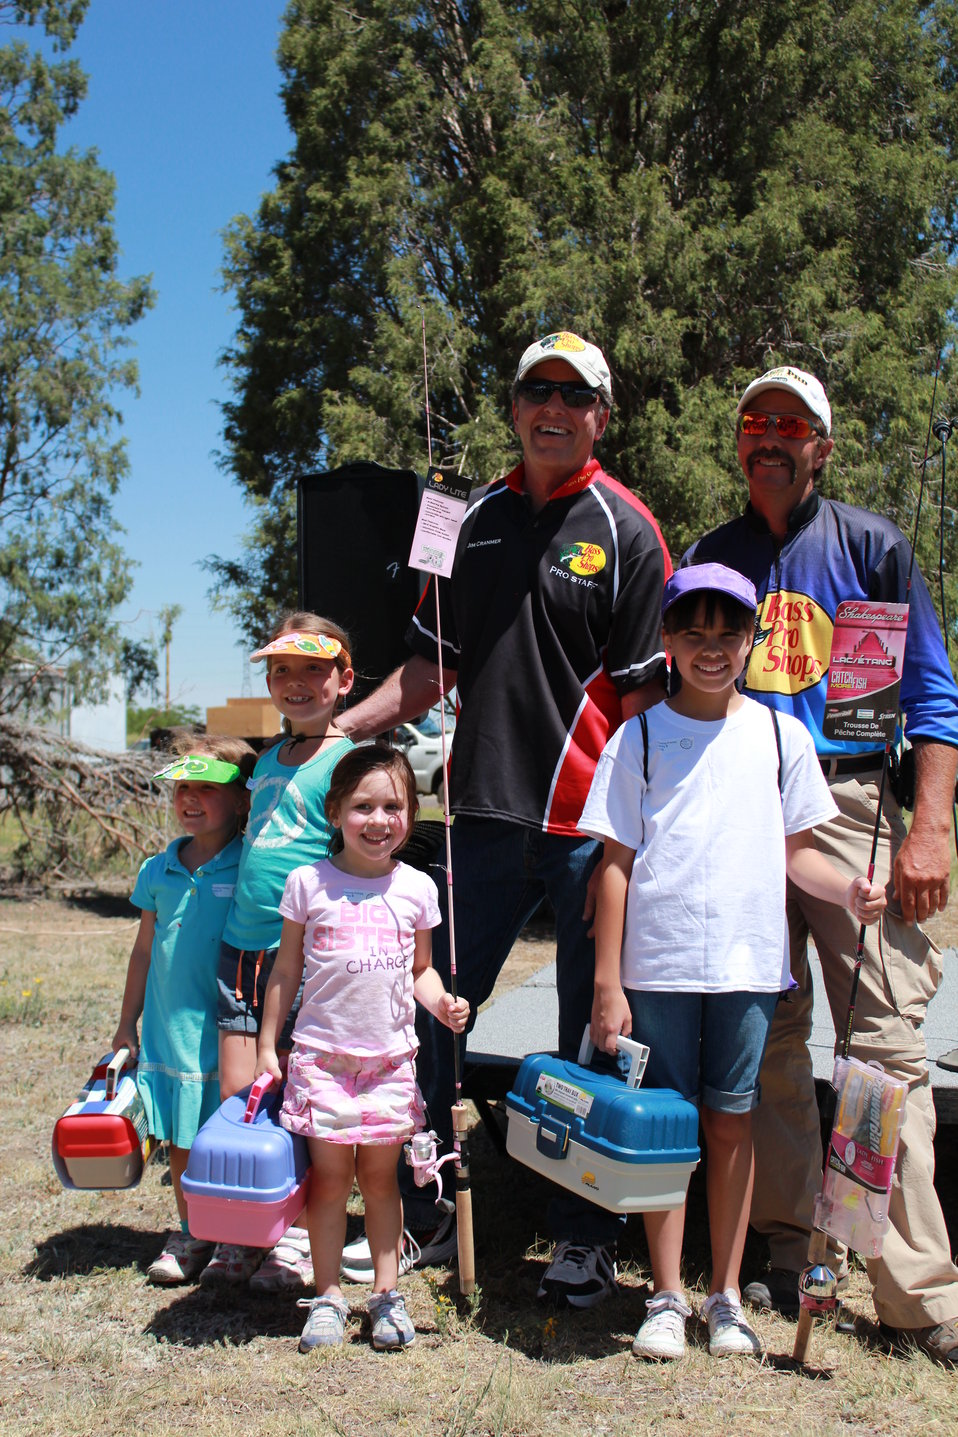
Fishing Frenzy Winners 2012

Nearly 200 young anglers from across the Denver area recently participated in Commerce City’s annual Fishing Frenzy. The event, now in its fifth year, celebrated National Get Outdoors Day and National Fishing and Boating Week.

Location: Lake Mary, Rocky Mountain Arsenal NWR

Credit: Jaclyn Kircher / USFWS

Photo Contest Entry #26